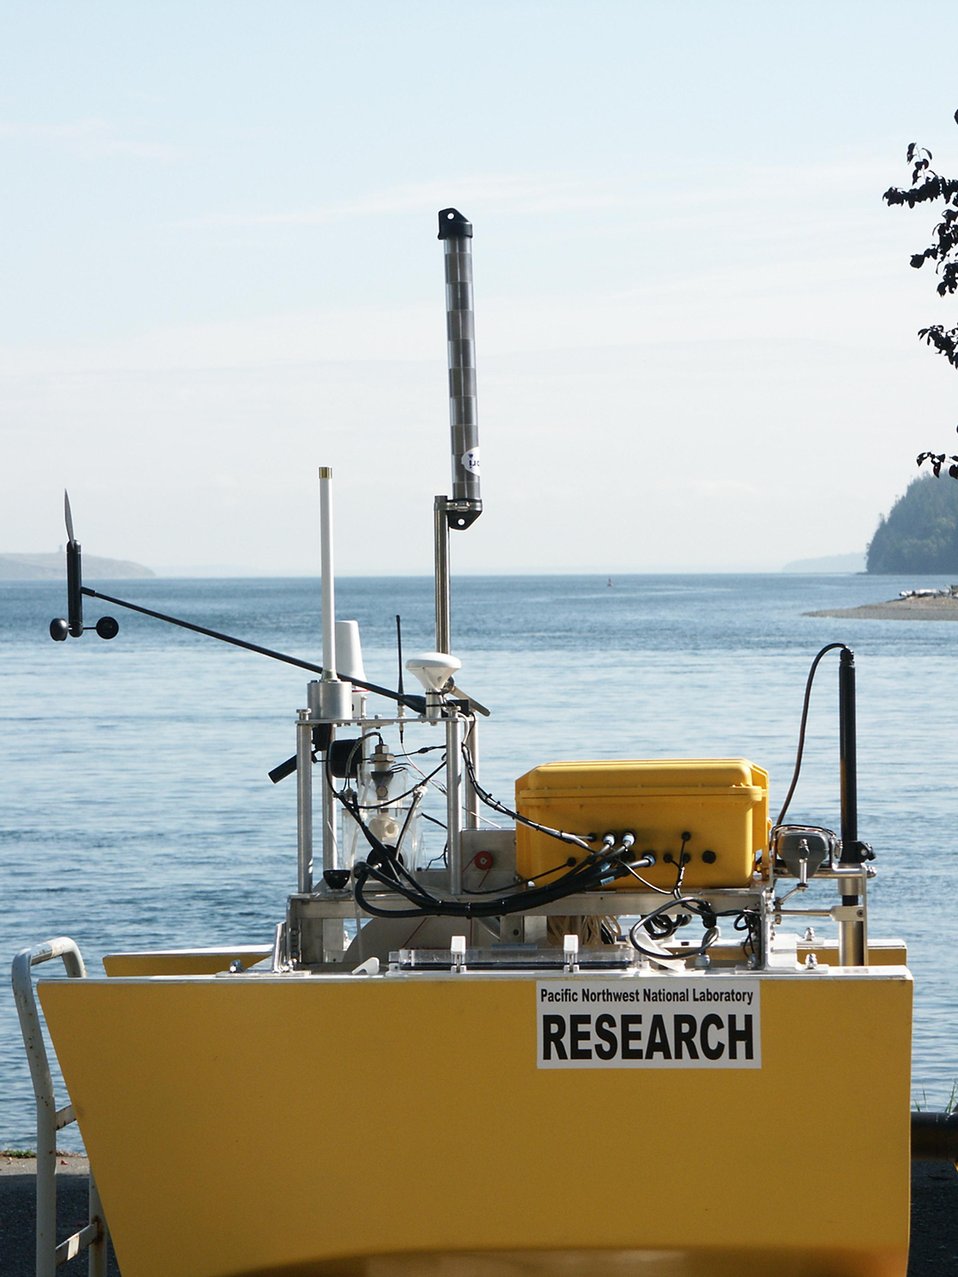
THE AQUATIC MULTISENSOR MEASUREMENT PLATFORM IS USED BY RESEARCHERS AT PNNL FOR TESTING AND PREPARING MARINE SENSORS AND INSTRUMENTATION IN COASTAL AND OTHER AQUATIC ENVIRONMENTAL.